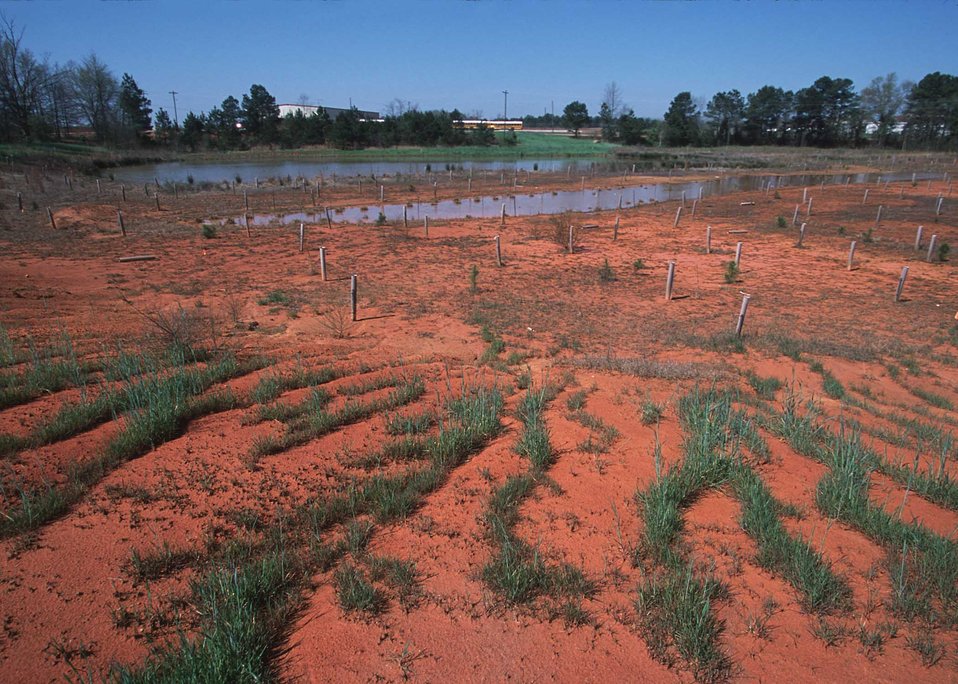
Wetland project that is part of the Barnsville Recreation Center and outdoor classrom. The trail and wetland serve as an outdoor classroom and has a nature trail through natural and constructed wetlands. Assistance also provided by RC&D.